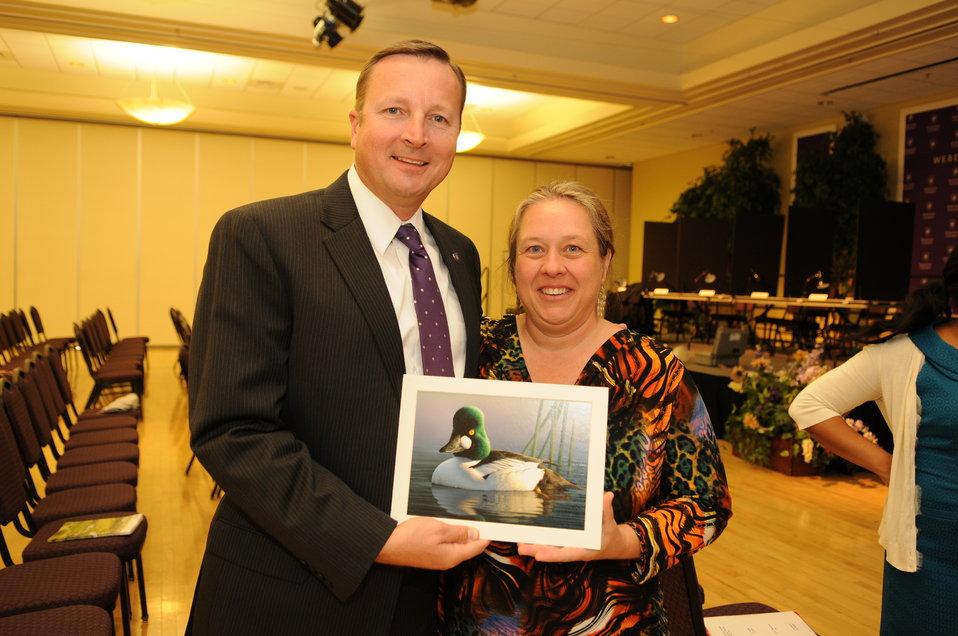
Everyone Loves a Winner

The U.S. Fish & Wildlife Service sponsored the 2012 Federal Duck Stamp Art Contest September 28 and 29 in Ogden, Utah, at Weber State University. A panel of five judges was responsible for choosing the art work used to design the 2013-2014 Migratory Bird Hunting and Conservation Stamp.